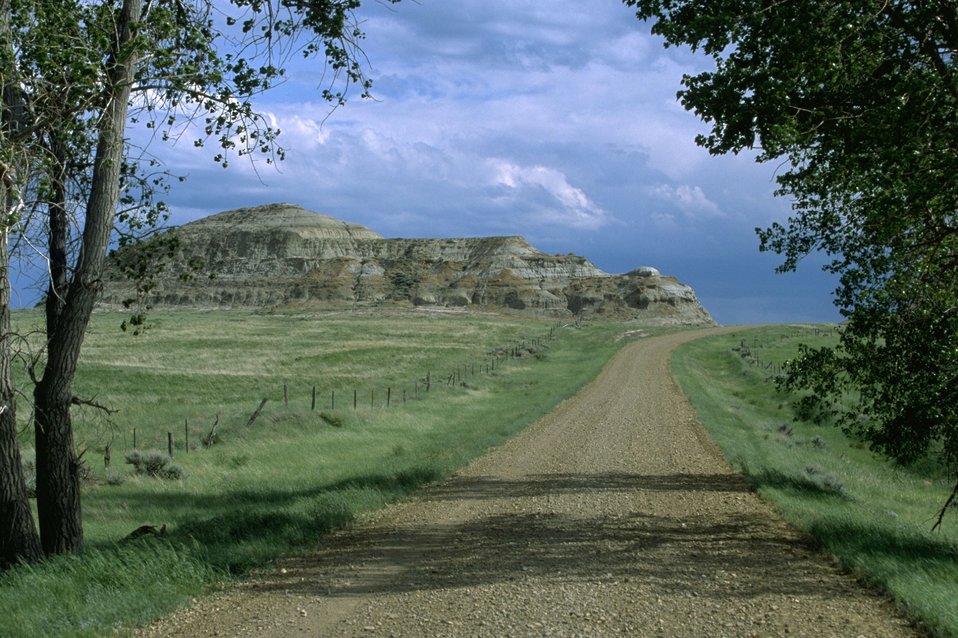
Storm clouds behind a butte in central Montana